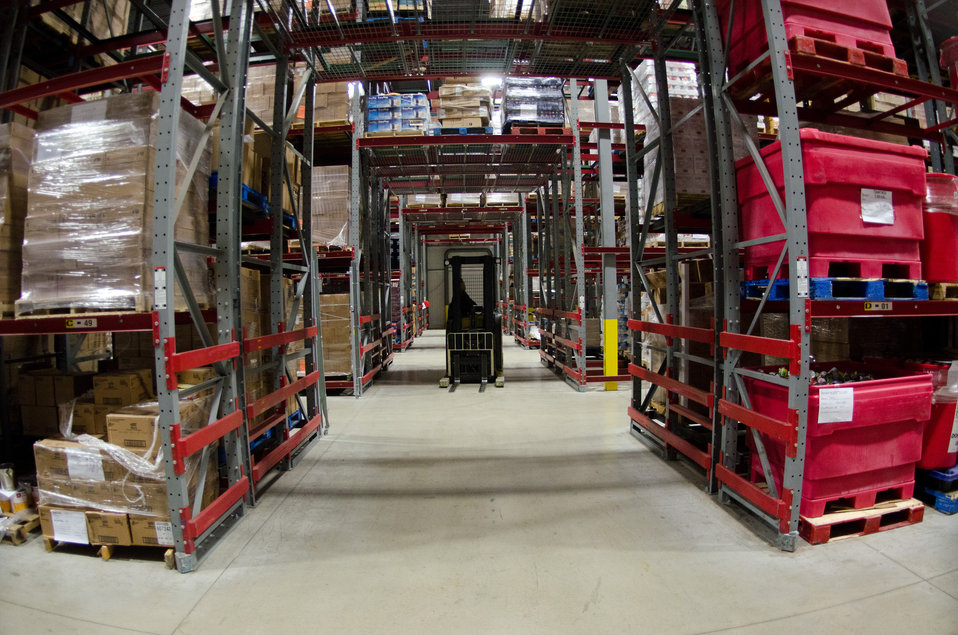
The United States Department of Agriculture donated commodities such as The Emergency Food Assistance Program (TEFAP), are just some of the many sources that make up the more than 44 million pounds of food that flow in and out of the warehouse of the San Antonio Food Bank (SAFB) they package and palletize them for fast distribution from its San Antonio, TX., headquarters, on Monday, October 31, 2011. SAFB is a non-profit organization that serves as a clearinghouse by receiving and storing truckloads of donated food, produce, and other grocery products, they then distributes these items to over 500 service agencies that help people in need.
“We couldn’t do what we do without our partnership with USDA’” said President and CEO Eric Cooper. He continues, “We are privileged in partnering (with the USDA) to feeding kids, through the summer, with the Summer Food Service Program, and throughout the year, with the Child and Adult Care Feeding Program (CACFP). Then in our approach to feeding seniors, we partner with USDA in the Commodities Supplemental Food Program (CSFP), and the Senior Farmer’s Market (Nutrition) Program. And then work to bring all our (needy) parties together with our Supplemental Nutrition Assistance Program (SNAP) Outreach. You know, once families have access to food we believe it is important to educate them. Through the support of the SNAP-Education Program we are able to educate them during their time of need. With this comprehensive approach we are really able to get the right food, at the right amount, at the right time, to needy families throughout our community – which allows us to feed the fifty-eight thousand we do, each week.”
SAFB serves 16 counties in Southwest Texas and states, “Nearly one out of every four children and one out of every five adults in Southwest Texas lives in poverty and has difficulty meeting basic nutritional needs.” According to SAFB, sixty-five percent of the people requesting emergency food have children. “Additionally, the senior citizens and those living on a fixed income generally have limited funds for a consistent grocery budget.”
San Antonio is the seventh largest city in the nation with surrounding farms and ranches near its rivers and water supplies. When available they provide fresh surplus produce. Other commodities come from the food industry and manufacturers. The major food brand companies that for various reasons have surplus commodities donate it to SAFB.
Texas farmers supply fresh produce to their Fresh Produce Program.
Public donations come in the form of money, food, volunteer time, and advocacy.
Their fleet of trucks pickup and deliver food as needed.